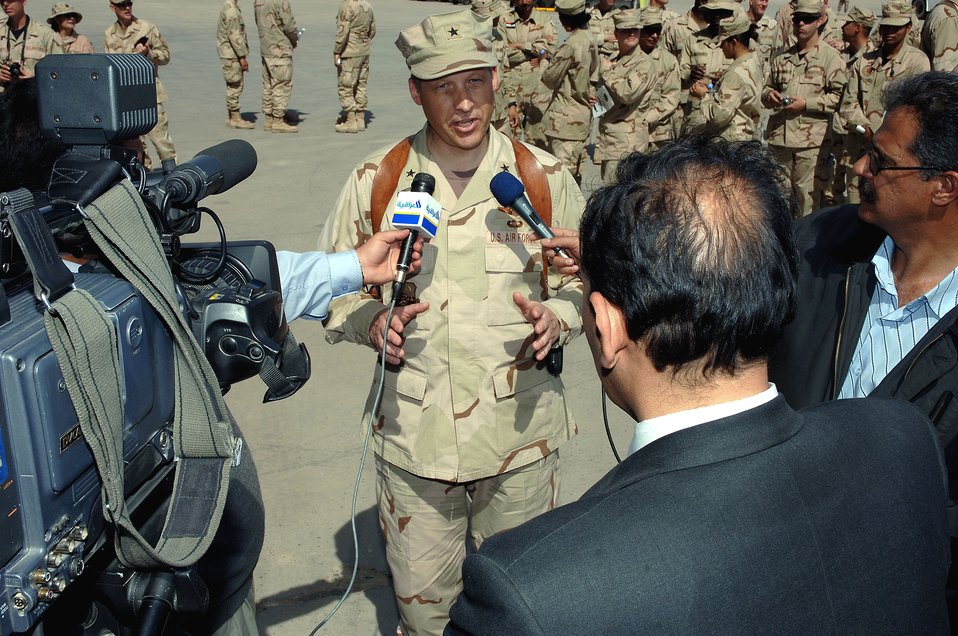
Iraqi Air Force history

Brig. Gen. David Eidsaune talks to Iraqi media after the stand-up ceremony for the Iraqi Air Force's 23rd Squadron at New Al Muthana Air Base, Iraq, Tuesday, March 7, 2006. The event culminated more than a year of training by U.S. Airmen with the Multinational Security Transition Command Coalition Air Force Transition Team. This is the first post-Saddam Hussein era Iraqi Air Force base and squadron. General Eidsaune is the director Air Component Coordination Element, Multinational Forces-Iraq.